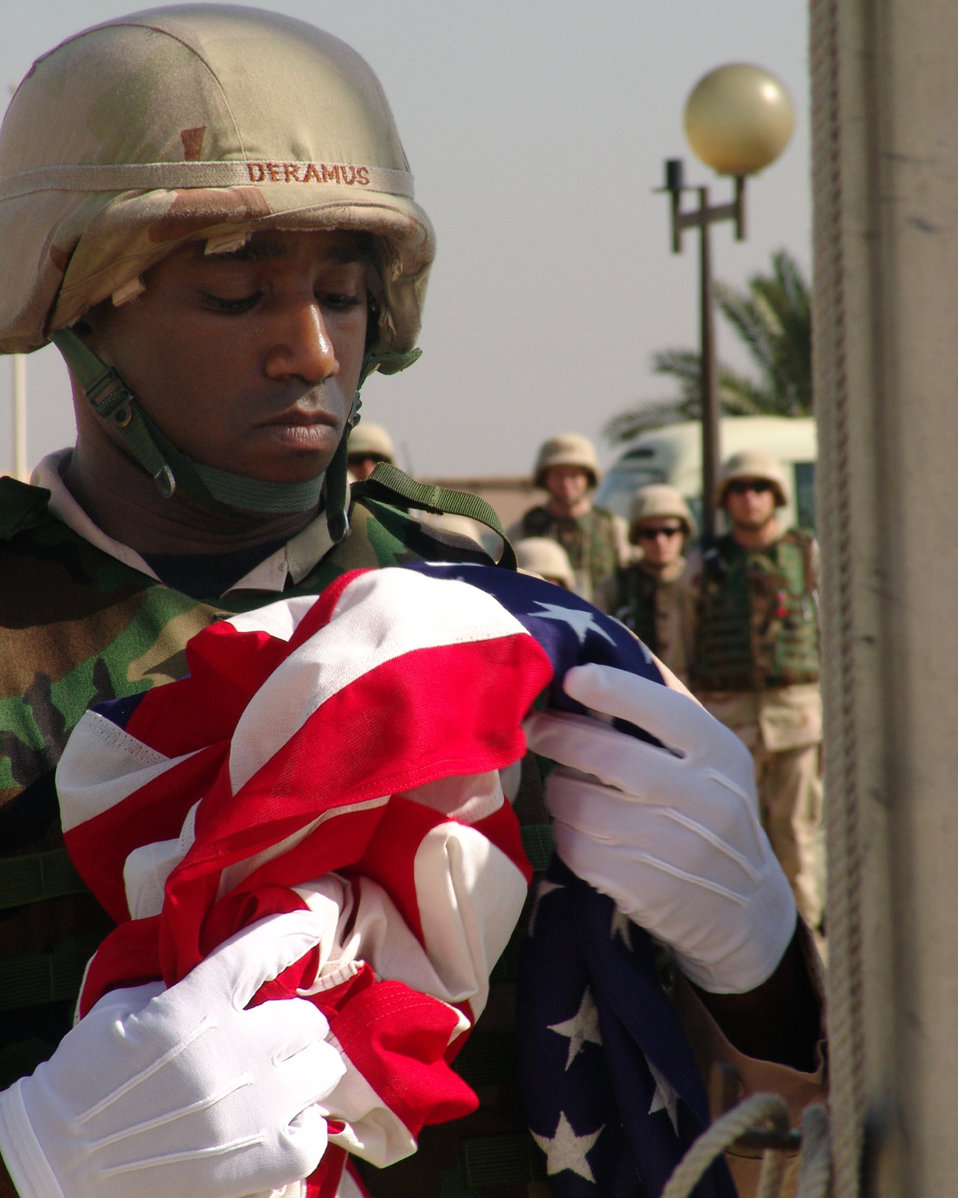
A day to remember

BAGHDAD, Iraq -- Master Sgt. Timothy Deramus clinches the U.S. flag during a Veterans Day ceremony at Camp Sather here Nov. 11. Sergeant Deramus is an information manager deployed from Luke Air Force Base, Ariz., and is the noncommissioned officer in charge of the camp's honor guard detail.